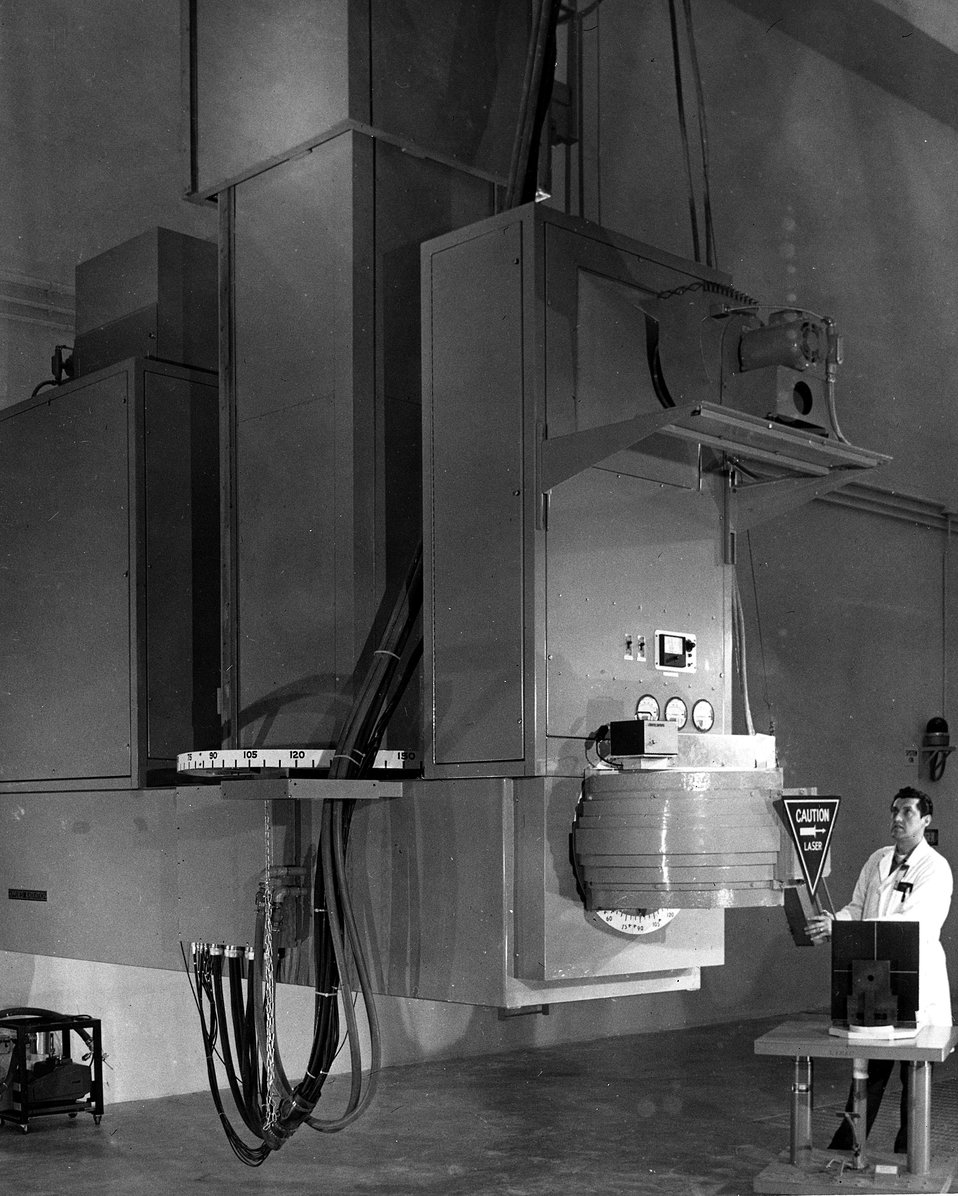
This twelve million electron volt (12 Mev) radiographic linear accelerator, which has recently been installed at the Atomic Energy Commission's Y-12 Plant in Oak Ridge, Tennessee, is a powerful nondestructive test instrument. Circa 1972.